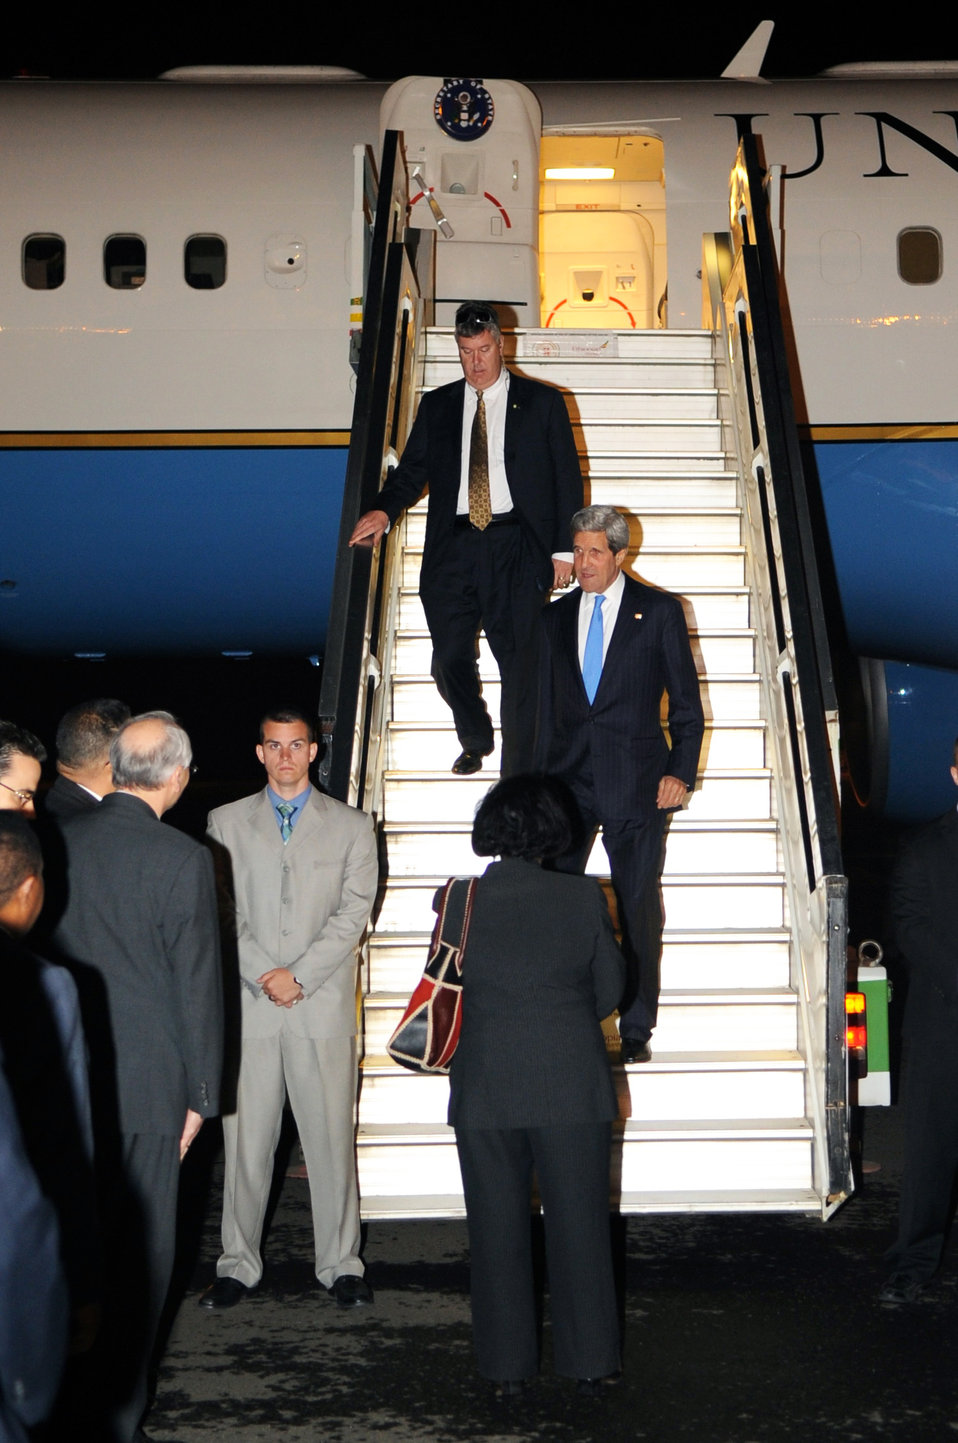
Secretary Kerry Arrives in Addis Ababa, Ethiopia

As Madame Sinkinesh Ejigu, Minister of Mines for Ethiopia, awaits, U.S. Secretary of State John Kerry disembarks from his plane after landing in Addis Ababa, Ethiopia, on May 24, 2013, for the Africa Union 50th anniversary meeting.